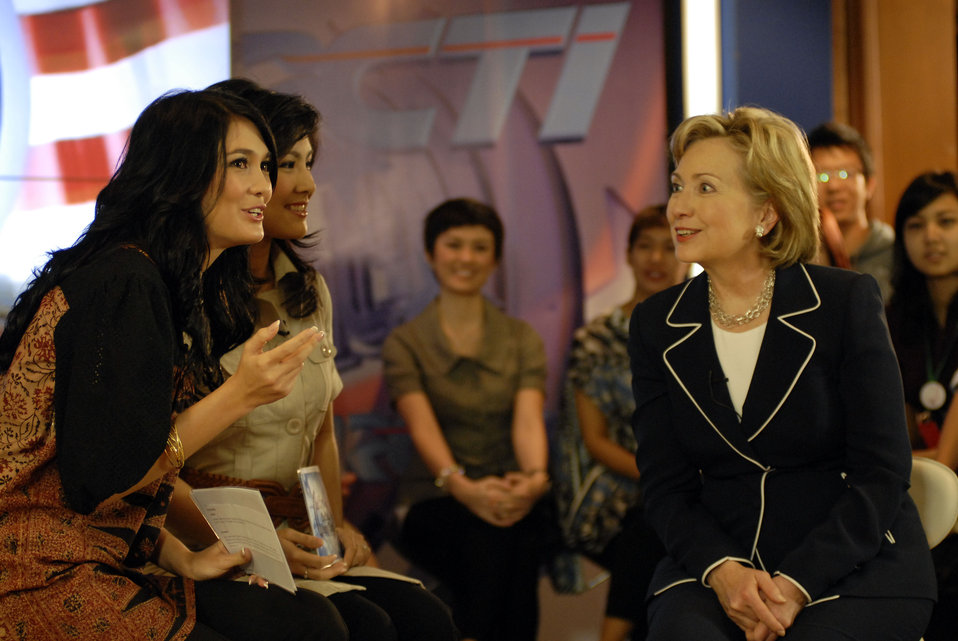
Secretary Clinton on Indonesian 'Dahsyat' TV Show

Hosts Luna Maya (left) and Isyana Bagoes Oka (center) interviews U.S. Secretary of State, Hillary Clinton on top rated Indonesian youth variety show “Dahsyat” (“Awesome”) in Jakarta, Indonesia February 19, 2009.